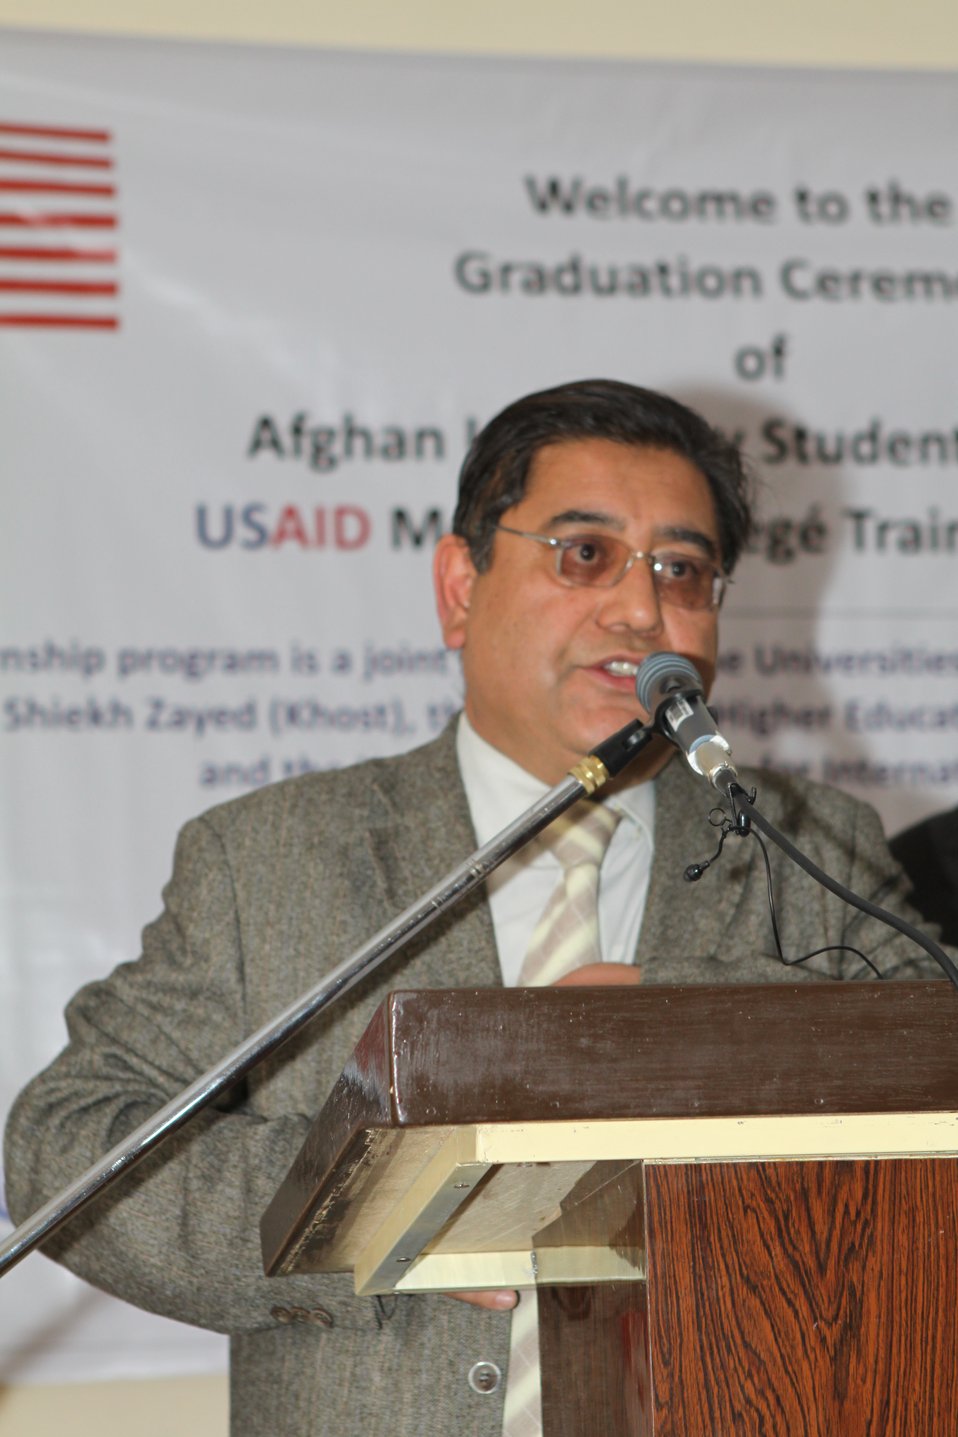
Female University Students Complete Internship

Kabul, Afghanistan | March 16, 2011 – In response to a demand for qualified Afghan engineers, Kabul University celebrated completion of an intensive five-month Mentor Protégé Training Program today by 10 female fourth year university students. The Training Program is a joint effort between the Government of the Islamic Republic of Afghanistan, the U.S. Agency for International Development (USAID), and the Universities of Kabul, Kandahar, Alberoony in Kapisa, Shiekh Zayed in Khost. The graduation ceremony highlighted collaboration with these national institutions in building the technical skills of young Afghans, made possible by USAID.

Four of the interns are engineers, while the remaining six are from the faculties of computer science, economics, and psychology.

Speaking about the event, H.E. Minister of Public Works Abdul Qudus Hamidi said, “The future of Afghanistan lies in developing the skills of our youth, and the engineering skills of these graduates today represent a small but important step forward for the country.”

Keynote speakers at the ceremony included H.E. Deputy Minister of Higher Education Abdul Rahim; USAID Senior Deputy Mission Director Robert Hellyer; and Chancellor of Kabul University Professor Hamidullah Amin. Approximately 150 people, including current and former students attended the graduation.

Launched last year, the Mentor Protégé Training Program has provided qualifying students the opportunity to intern with USAID’s Strategic Provincial Roads-South and East Afghanistan project and gain practical experience in a real work environment. The goal of the program was to offer interns the opportunity to gain hands-on experience to reinforce their formal studies. A total of 30 students from four national universities have benefitted from this program.

“The promotion of women’s rights is integrated into the overall U.S. Government development strategy and can be found in key programs, including education, healthcare, security, rule of law, political participation, agriculture, and economic development,” said Robert Hellyer. “The U.S. Government is committed to the Afghan leadership of programs that directly enhance development, particularly as it relates to women’s issues.”

This event also highlighted the learning achievements of students and emphasized the importance of hands-on internship programs. The curriculum is designed to instill students with the knowledge and confidence to qualify for engineering positions upon completion of their fourth year at their respective universities.